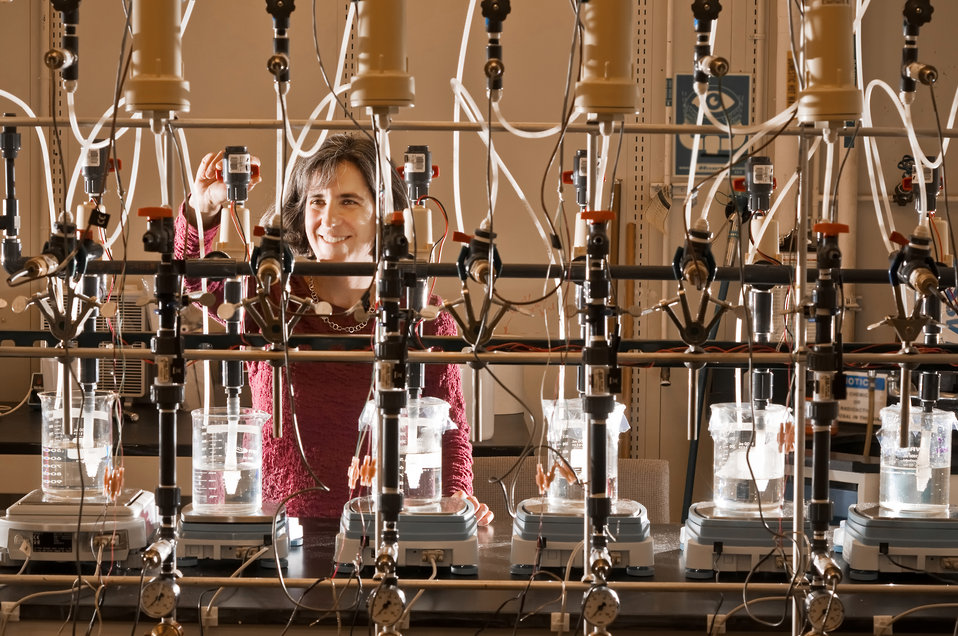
Sandia researcher Susan Altman conducts research to minimize biofueling on reverse osmosis membranes use for desalination in her laboratory.